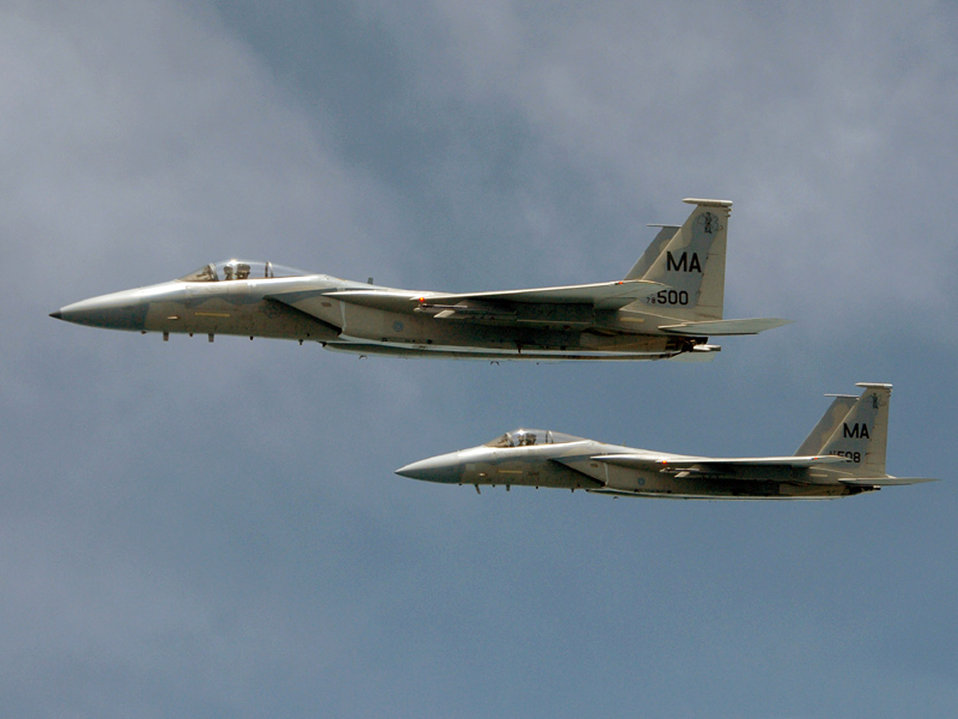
Air Force Week New England kicks off at Pease Air National Guard Base

Two F-15 Eagles from the Massachusetts Air National Guard's 102nd Fighter Wing participate in a special event held June 6 to promote Air Force Week New England which will take place in August.